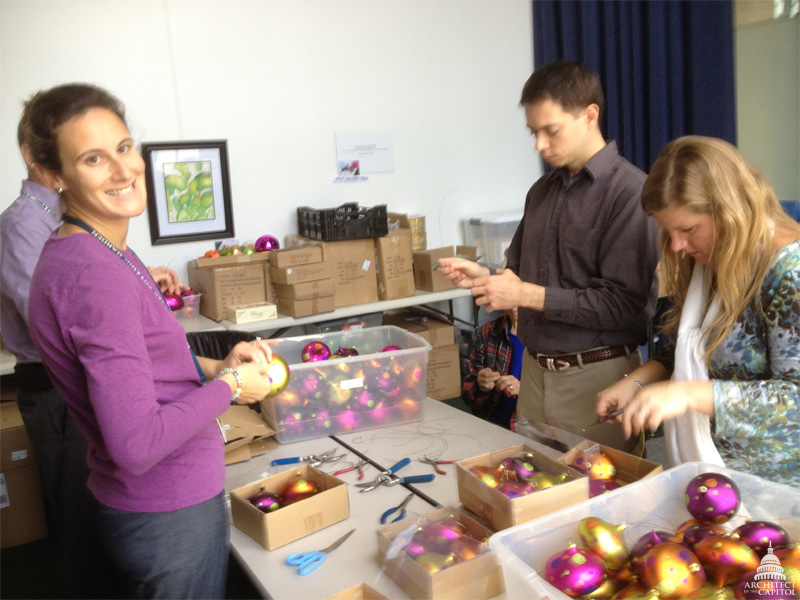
USBG staff prepare for Season's Greenings

Staff at the U.S. Botanic Garden decorate for their annual holiday exhibit, Season's Greenings.